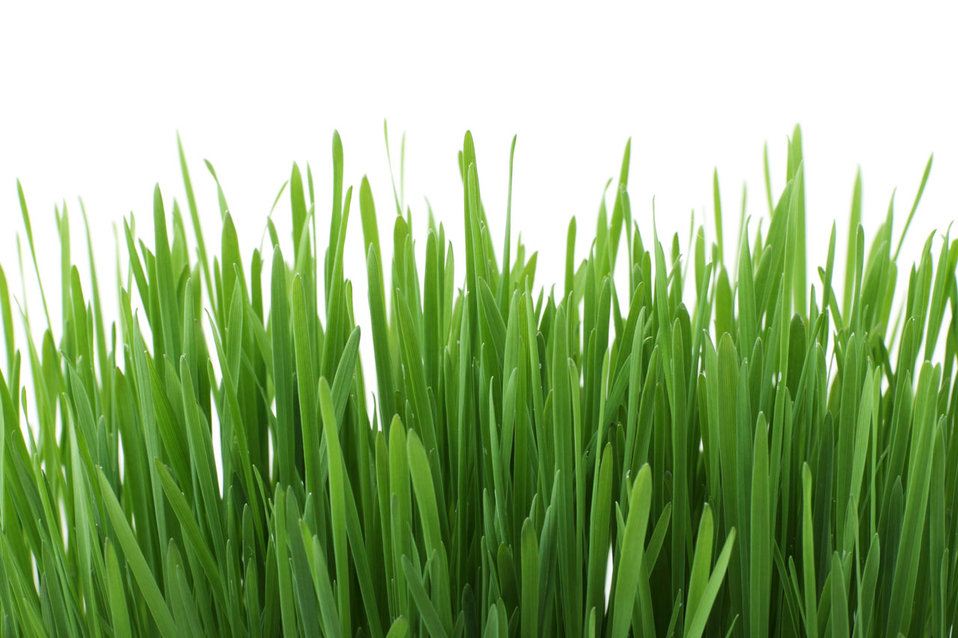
Fresh grass

Fresh green grass isolated on white background.